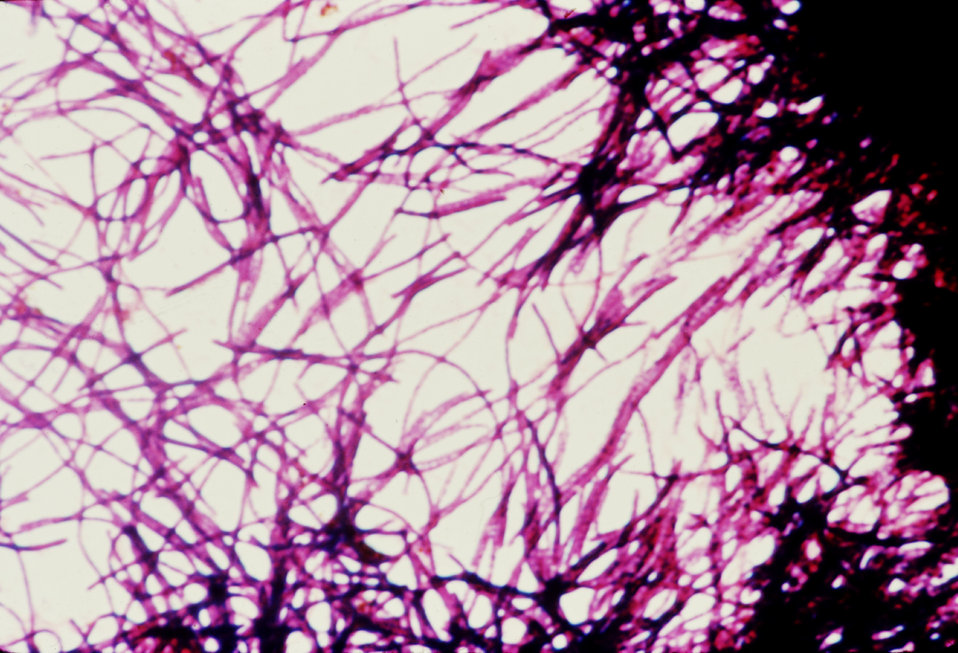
This is an impression smear photomicrograph of Clostridium difficile bacteria grown on cycloserine mannitol blood agar.